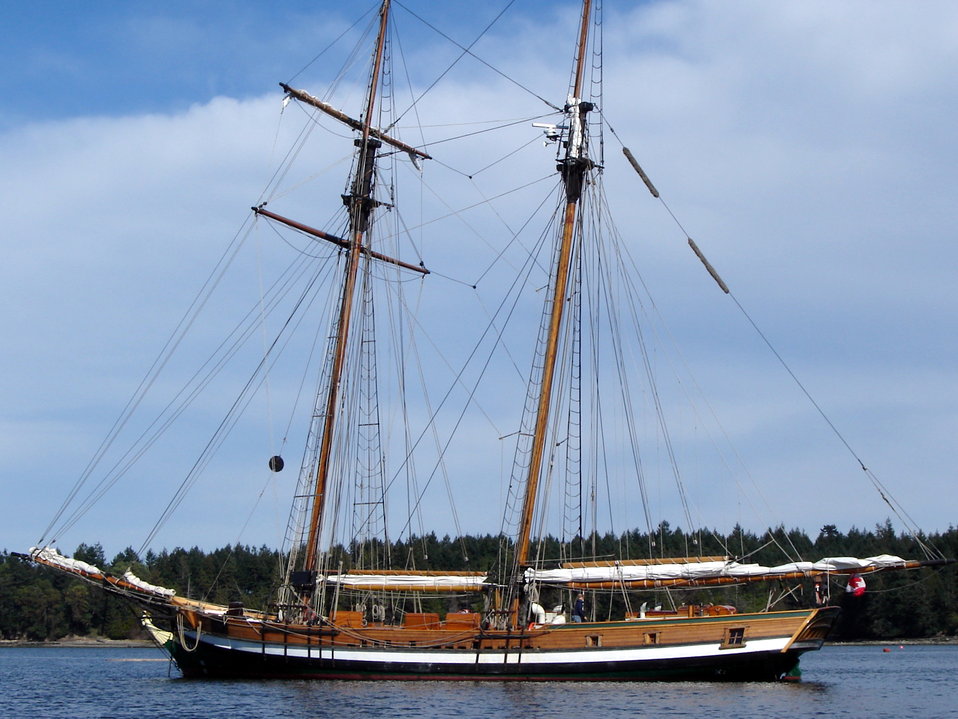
Photo taken by Graham Kingsley Pacific Swift of S.A.L.T.S.